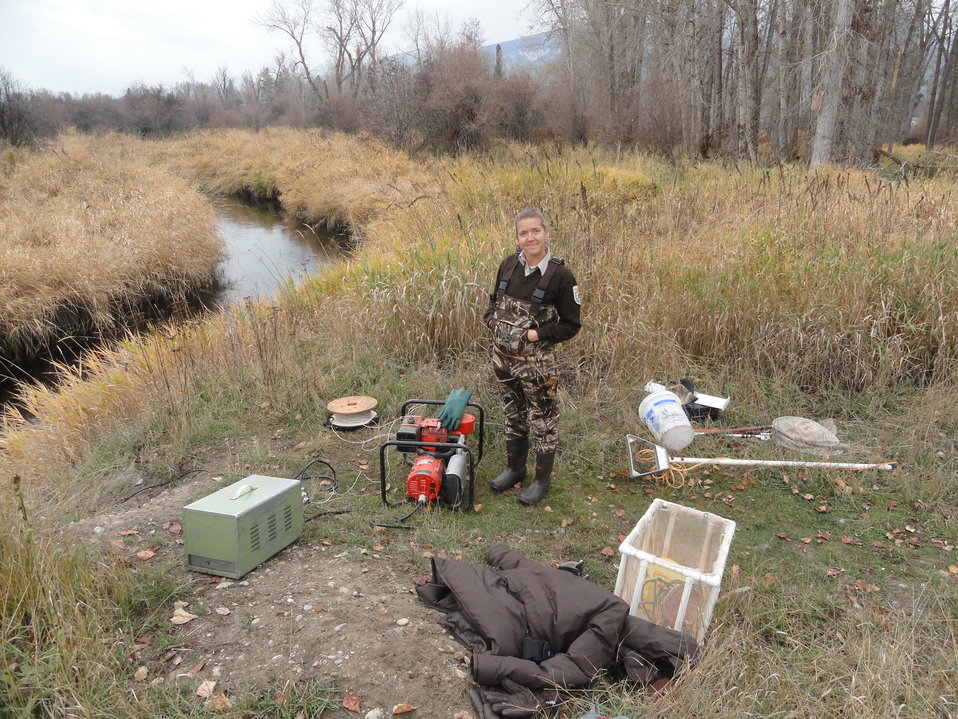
Erin Holmes is manager of Tualatin River National Wildlife Refuge in Oregon. Here she conducts an electroshock survey for endangered fish at Lee Metcalf National Wildlife Refuge in Montana.